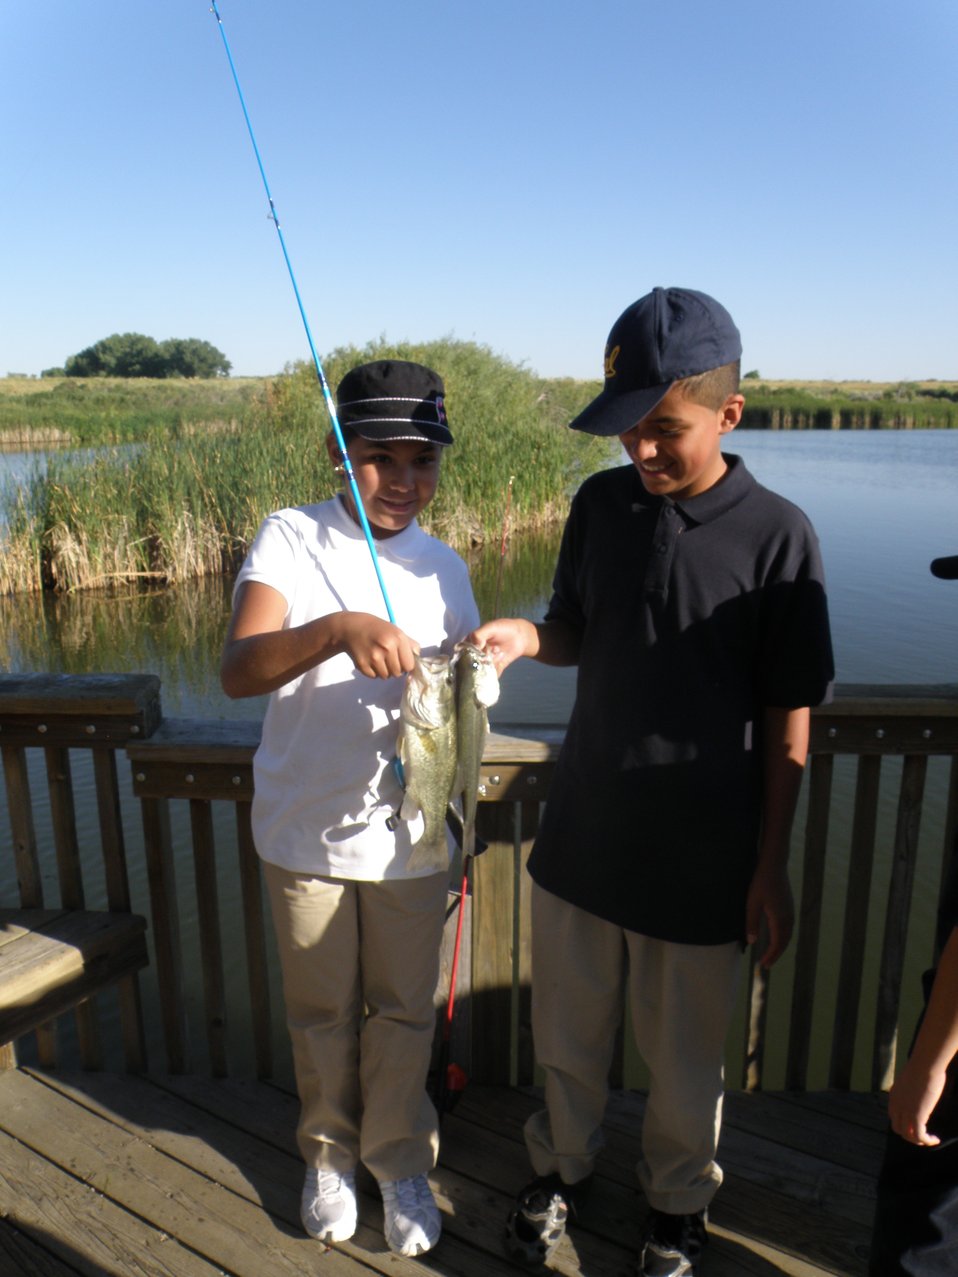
Fishing Frenzy Event at the Rocky Mountain Arsenal

Fishing Frenzy is an annual event open to the public. It is a day organized by the Rocky Mountain Arsenal National Wildlife Refuge in Colorado, and various partners such as Commerce City and the Bass Pro Shop. There are all sorts of learning stations, contests and activities for kids to learn and become more interested in fishing and wildlife conservation.